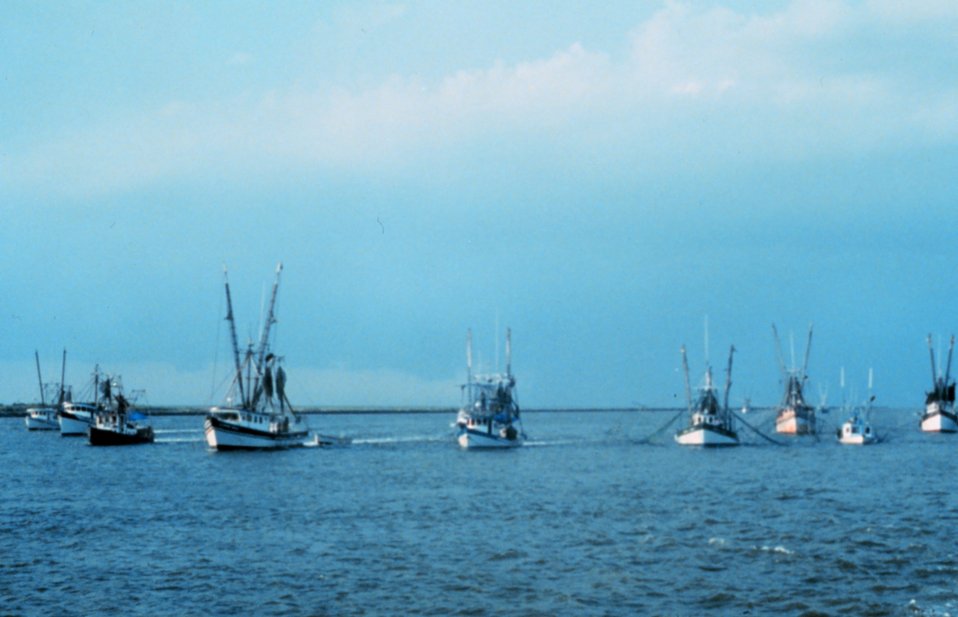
Shrimp boats protesting turtle-excluding device regulations on the Calcasieu River.